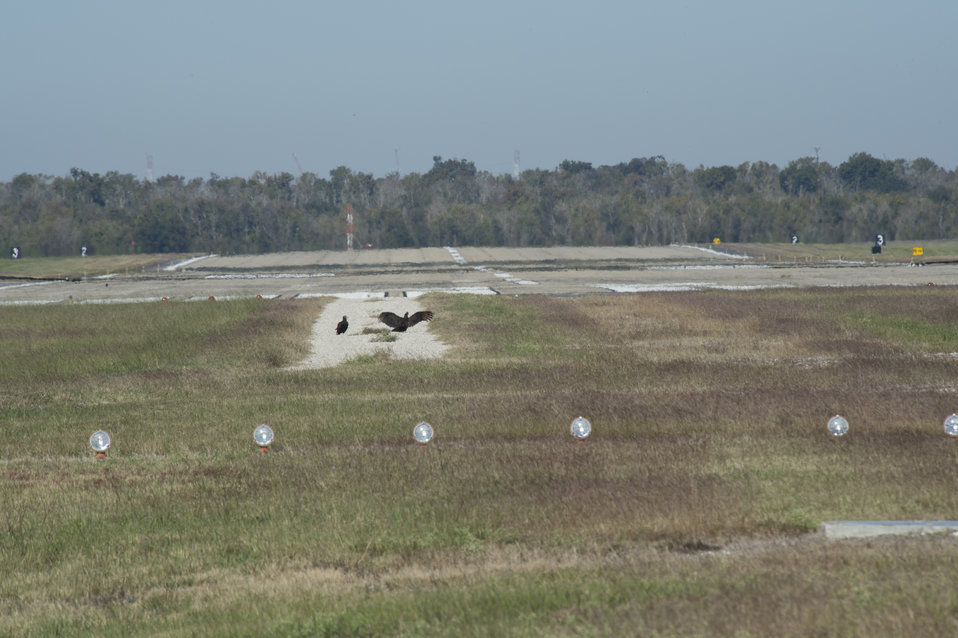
The U.S. Department of Agriculture’s (USDA) Animal and Plant Health Inspection Service (APHIS) Wildlife Services (WS) assists with the humane removal of animals from the Naval Air Station Joint Reserve Base in Belle Chase, LA on Wednesday, Nov. 20, 2013. Animals that wander onto the airstrip are dangerous to aircraft on take off and landing.